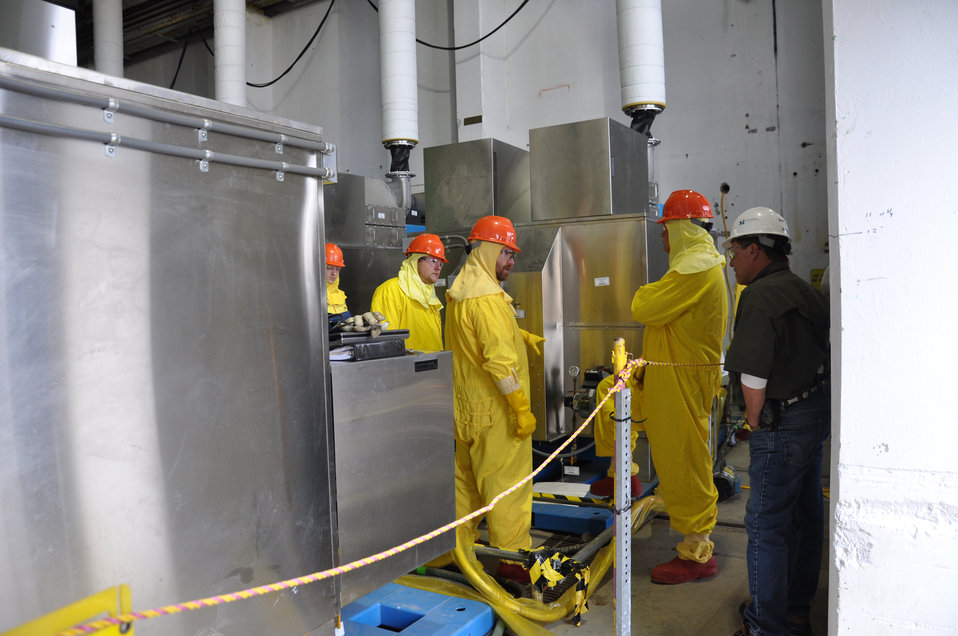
Evaporators in Place to Remove Water Stored at P-Reactor Disassembly Basin

One of the first steps in closing the book on the Cold War-era Savannah River Site (SRS) P-Reactor facility to achieve in situ closure has begun with the installation, testing and startup of six evaporator units that will ultimately remove about 4.6 million gallons of water from the 105-P Reactor Disassembly Basin.